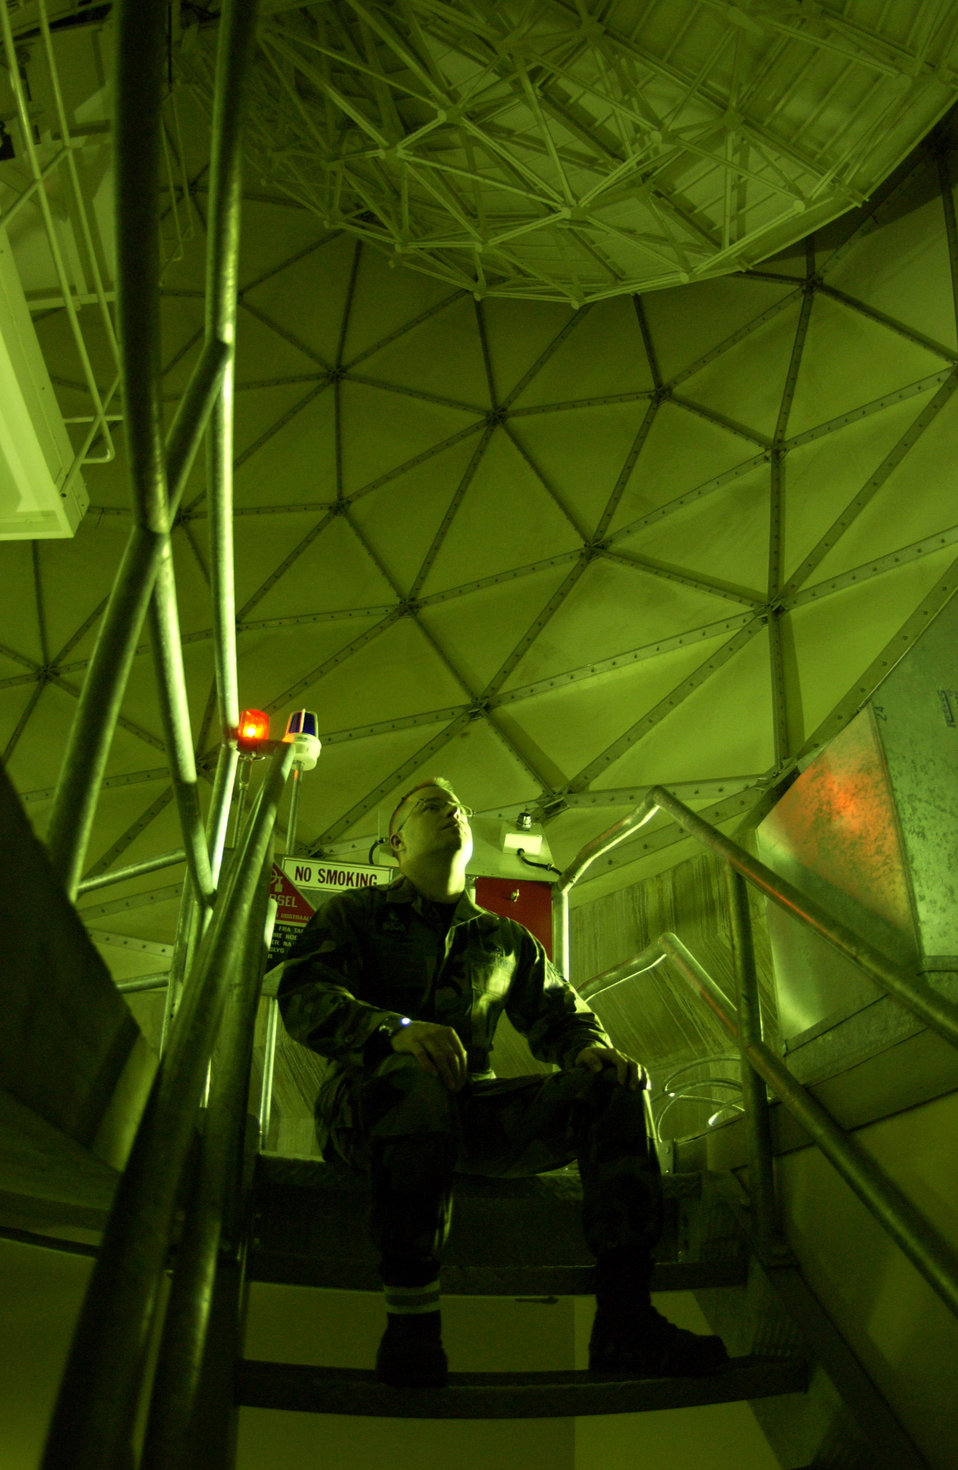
Golf ball

Tech. Sgt. Schubert observes a satellite dish inside one of the